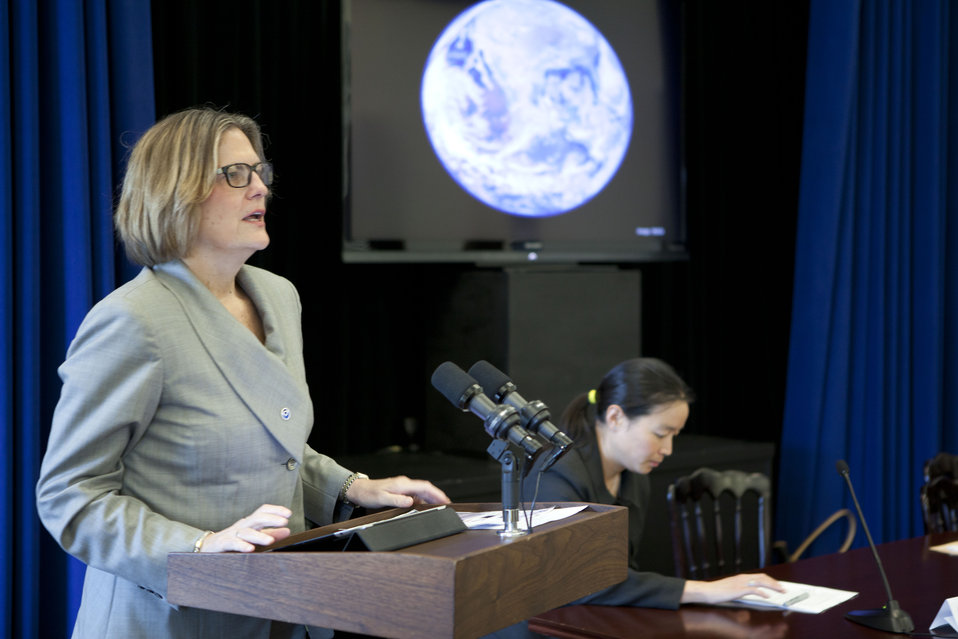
White House Leadership Summit on Women, Climate and Energy

Dr. Kathy Sullivan, former astronaut and Acting Administrator of the National Oceanic and Atmospheric Administration, took part on the first panel discussion of the day: Climate Science and Energy Solutions.